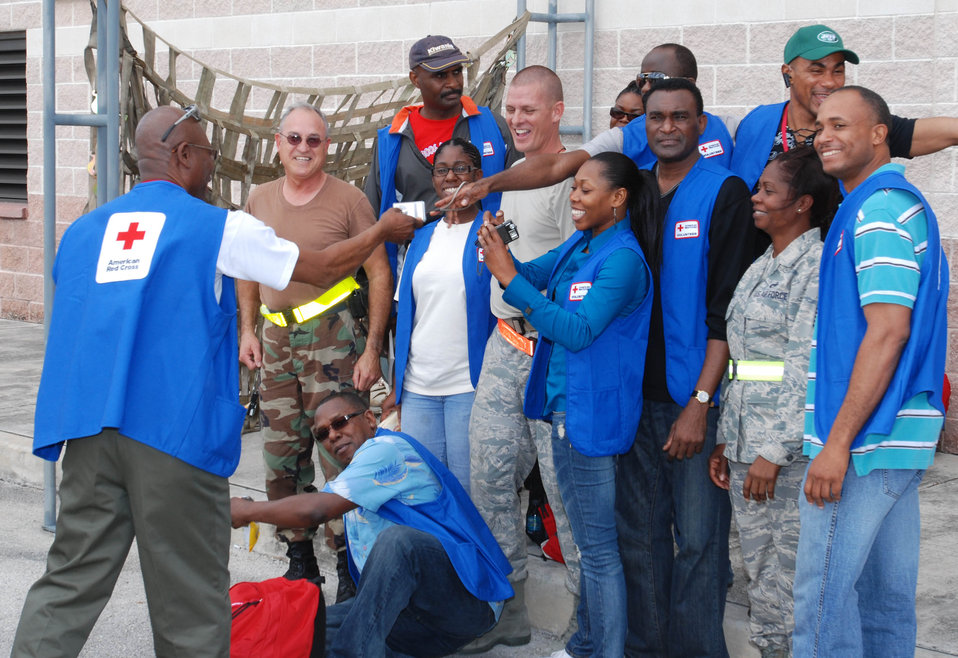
AF, Navy help Red Cross volunteers reach Haiti

Volunteers from the American Red Cross and Airmen from the 70th Aerial Port Squadron at Homestead Air Reserve Base, Fla., exchange cameras for a group photo Jan. 21, 2010. The Airmen helped process approximately 70 Red Cross volunteers for their flight to Haiti where the volunteers will work on the USNS Comfort, a floating hospital vessel providing medical assistance for earthquake victims.